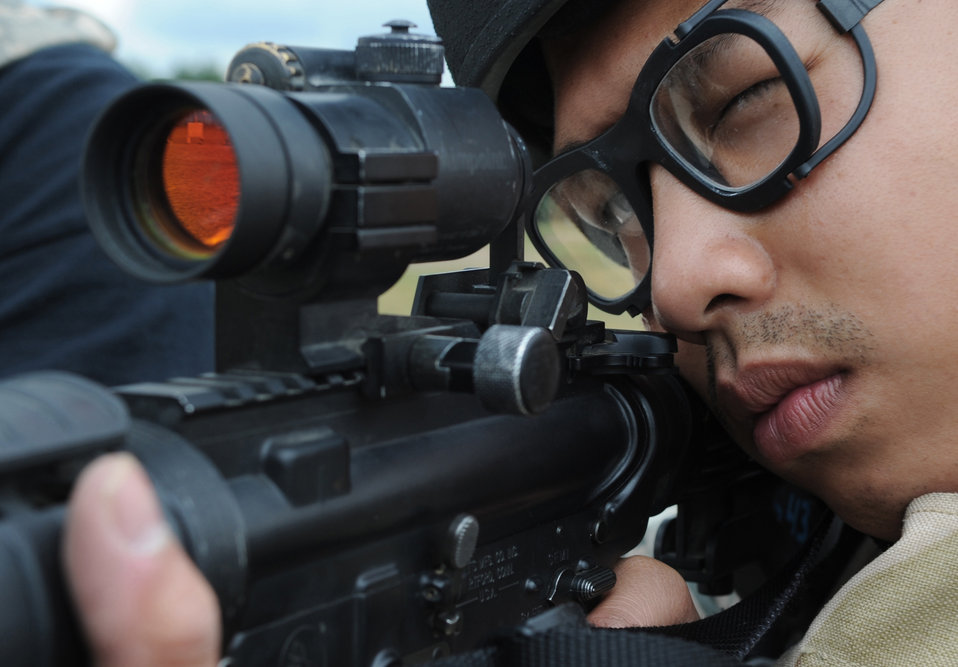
Exercise Allied Strike 2010

Capt. Jose Cadelina zeros in his M-4 rifle during Exercise Allied Strike 10 July 23, 2010, in Grafenwoehr, Germany. Captain Cadelina is the 4th Air Support Operations Squadron fighter duty officer.